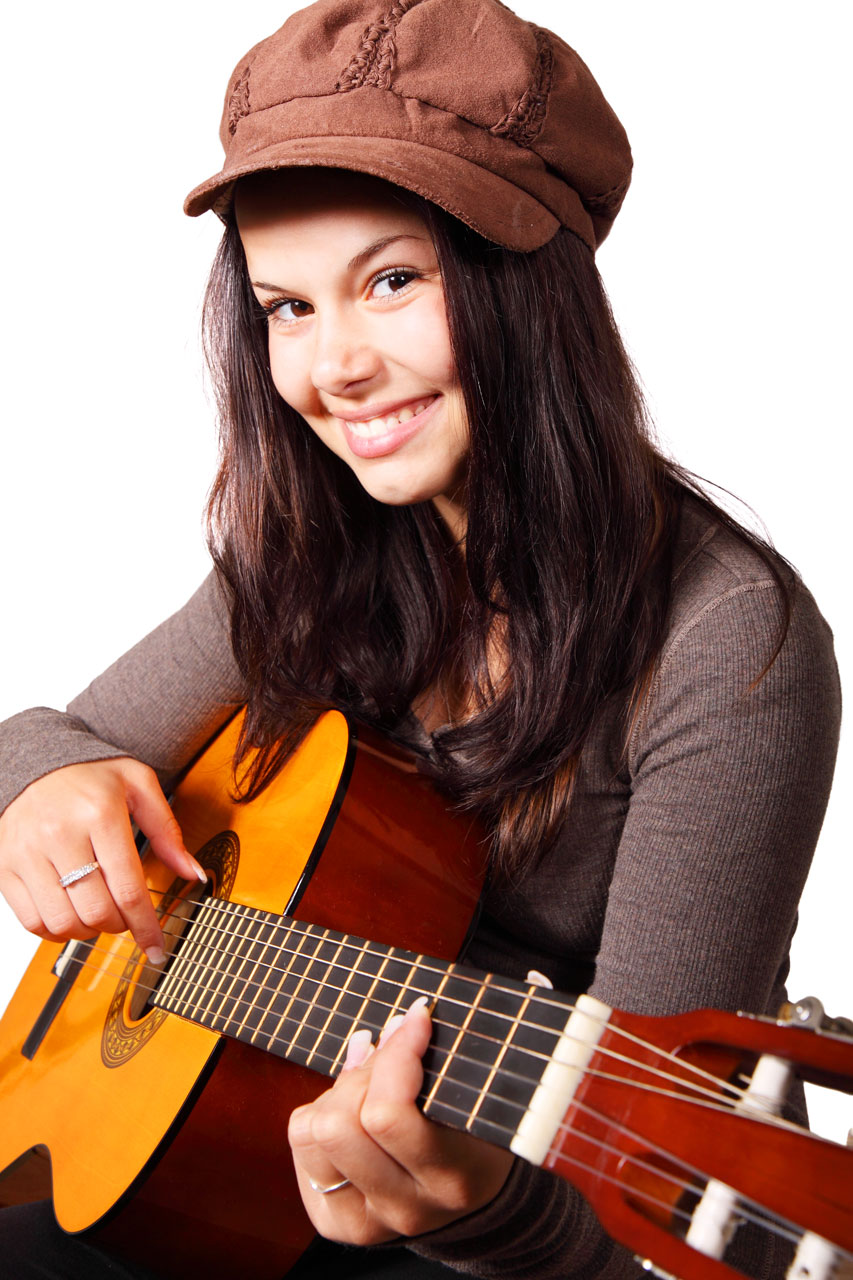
Playing guitar

Young woman playing acoustic guitar.